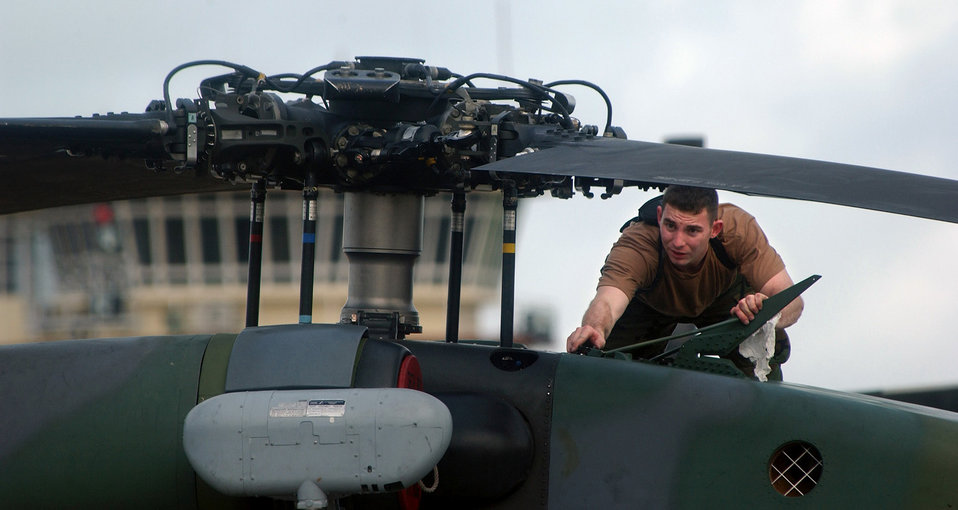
Humanitarian assistance

LUNGI, Sierra Leone -- Staff Sgt. Jason Krokos inspects an HH-60G Pave Hawk helicopter here. He is a crew chief assigned to the 85th Maintenance Squadron at Naval Air Station Keflavik, Iceland. Krokos is deployed to help provide recovery and emergency evacuation support for the humanitarian assistance survey team in Liberia.